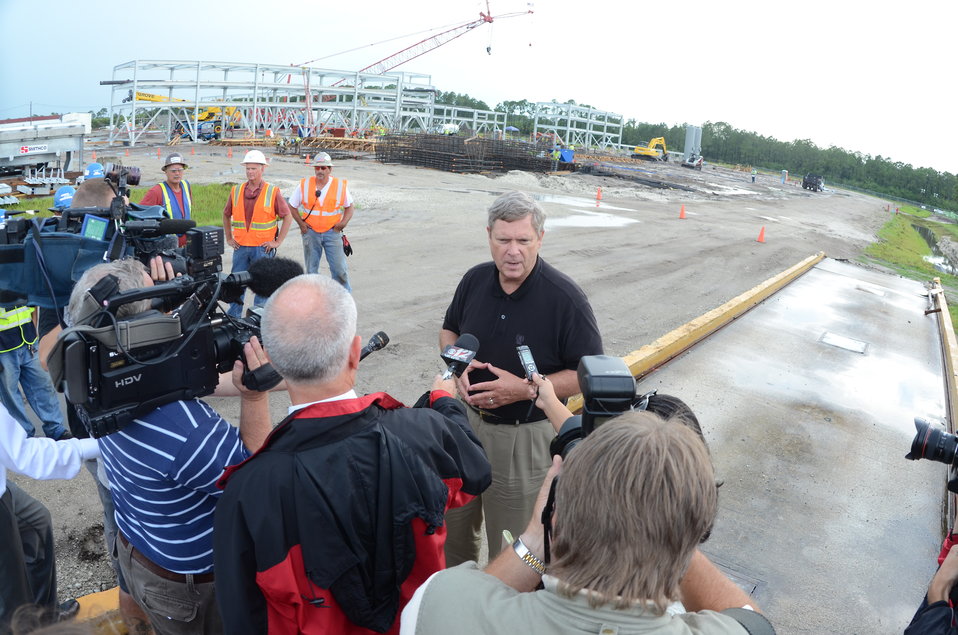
Agriculture Secretary Tom Vilsack visited the waste-to-energy bioprocessing facility under construction in Florida today to announce several small grants to support research into renewable fuels. The INEOS New Planed BioEnergy facility in Vero Beach, Florida, was granted a conditional Agriculture loan guarantee earlier this year to help build and operate a biorefinery capable of producing 8 million gallons per year of cellulosic ethanol and 6 megawatts of electricity.